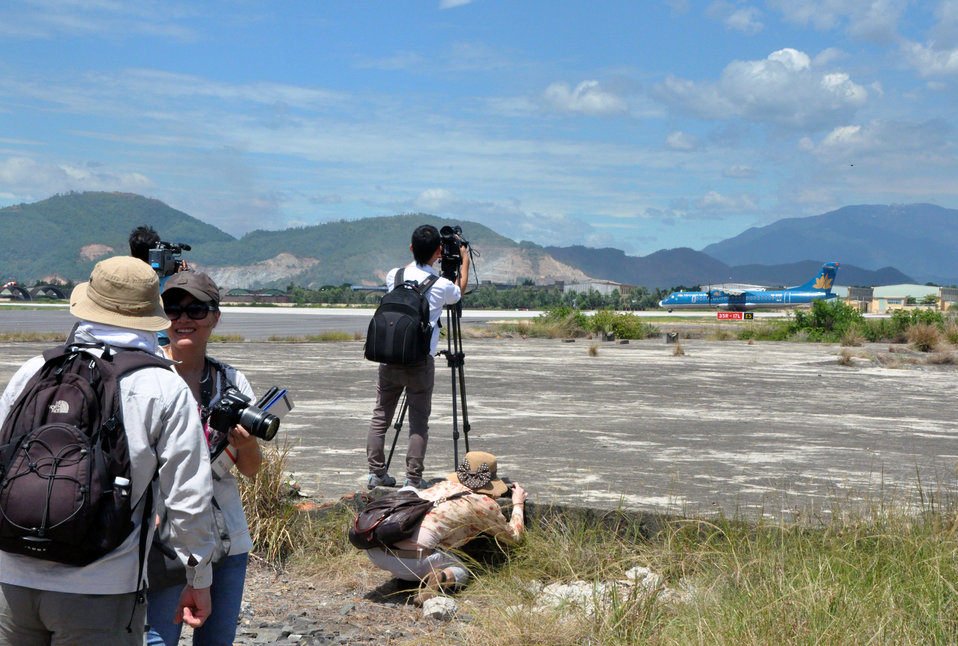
Photographers and visitors tour the airport site at the Environmental Remediation of Dioxin Contamination at Danang Airport Project Launch

Danang, August 9, 2012